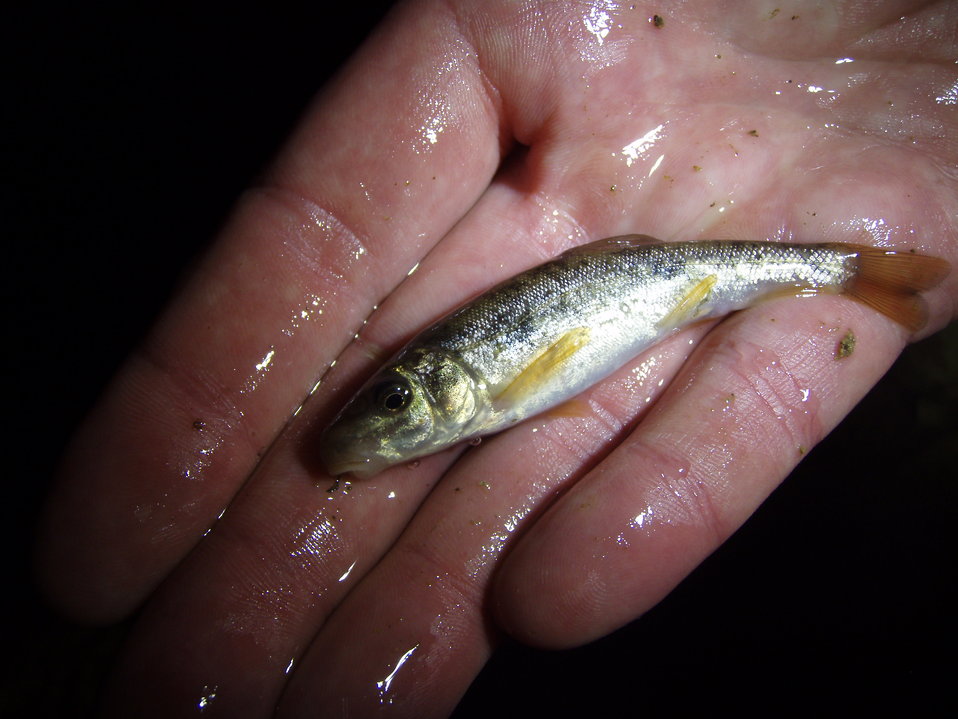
modocsucker #2

Modoc sucker is located in the Pit River watershed of Southern Oregon and northeastern California.